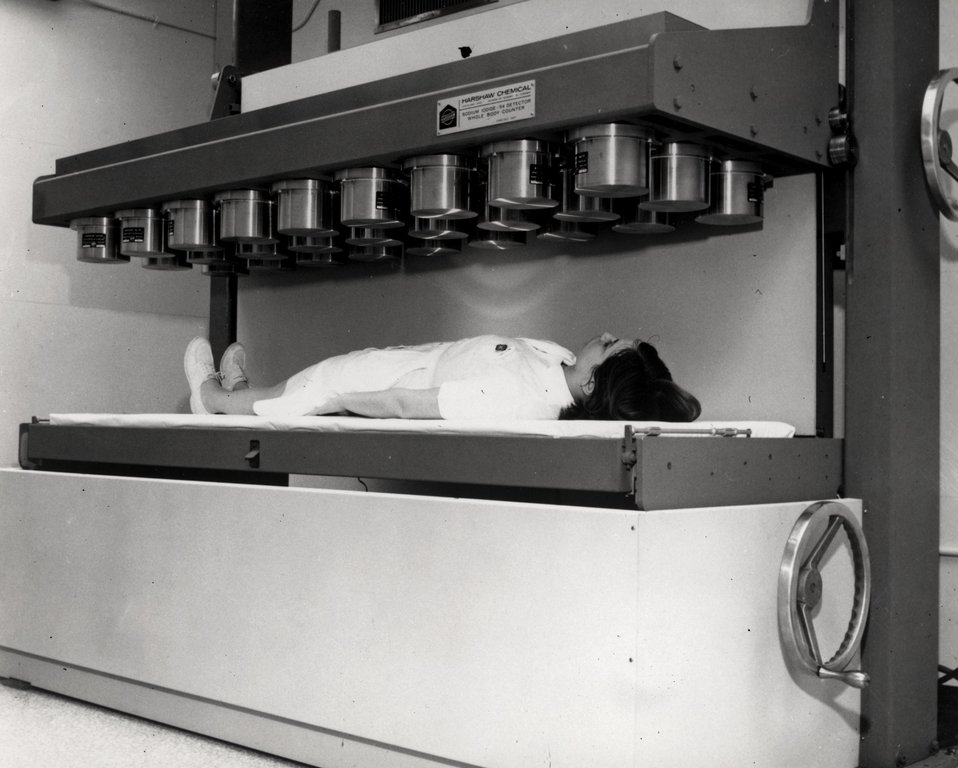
Low Level Whole Body Counting Facility, a nurse simulates a patient in the multi-crystal whole body counting and gamma ray scanning spectrometer system.
c.1968